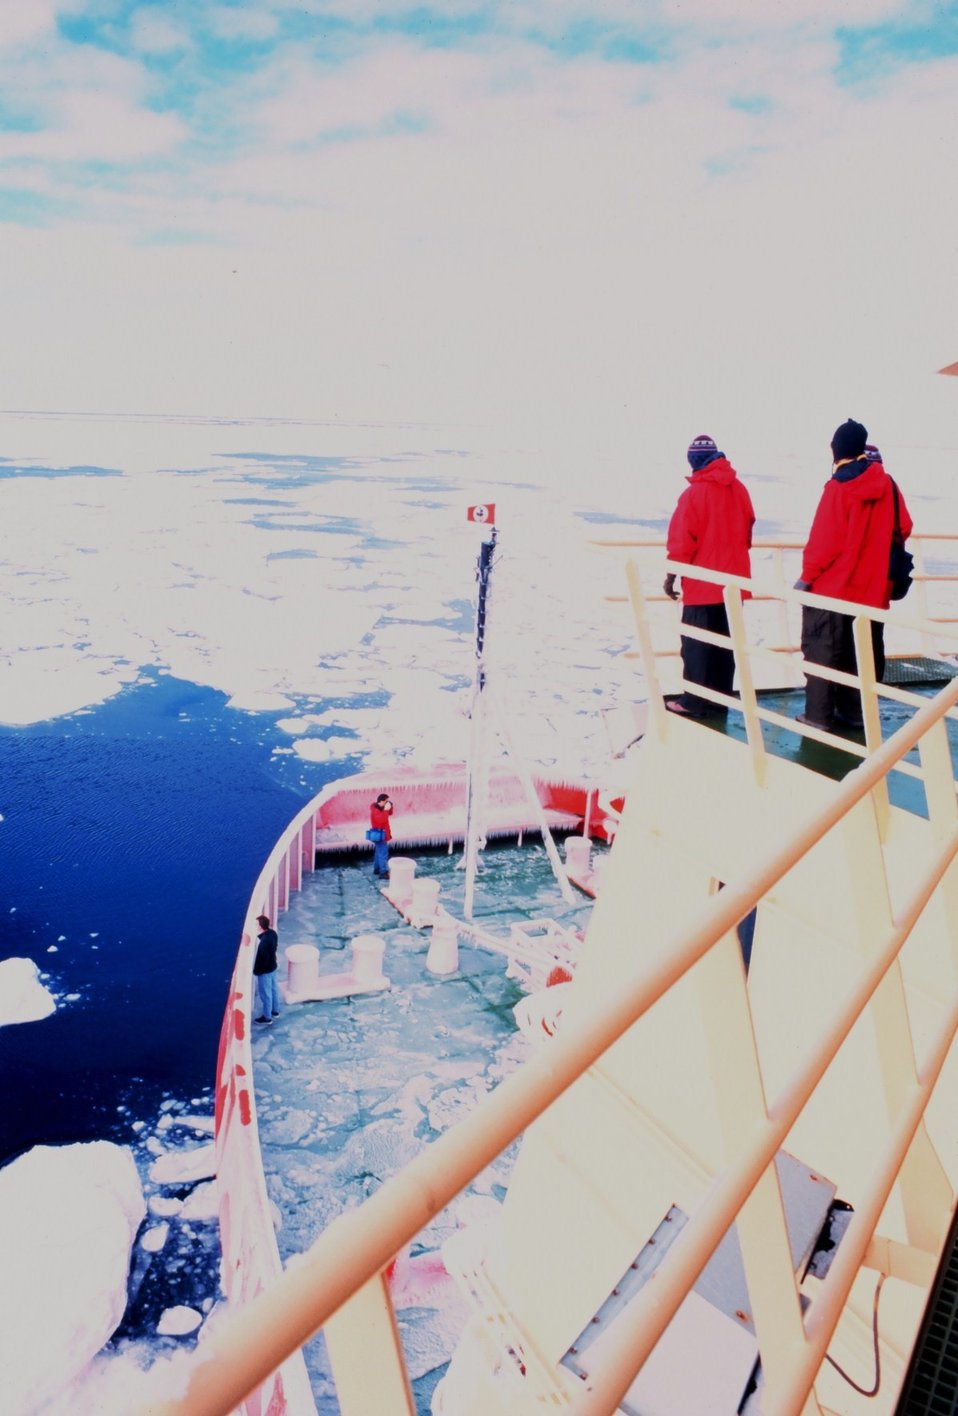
A bright view from the bridge and of the NATHANIEL B. PALMER